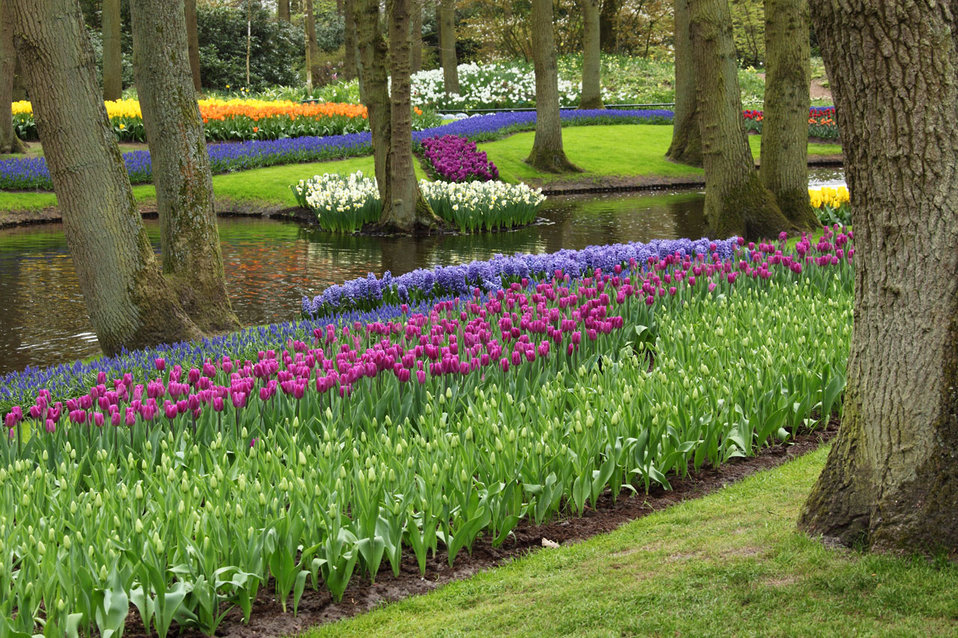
Keukenhof flower garden

Flower garden in keukenhof.